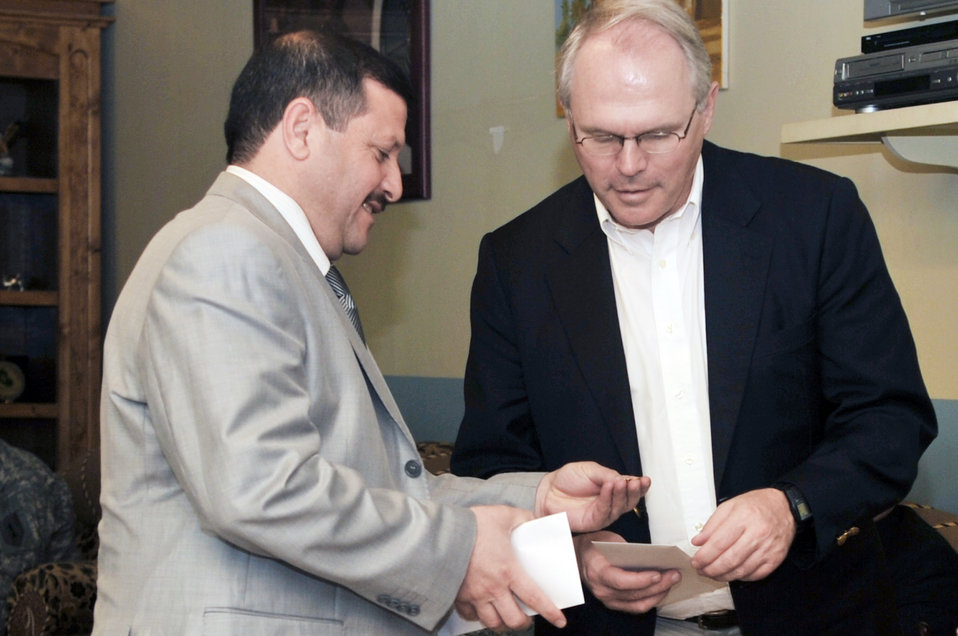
Ambassador visit

A local national shows his appreciation to U.S. Ambassador to Iraq Christopher Hill by giving him a pin during his visit April 23, 2010, to the provincial reconstruction team at Joint Base Balad, Iraq.